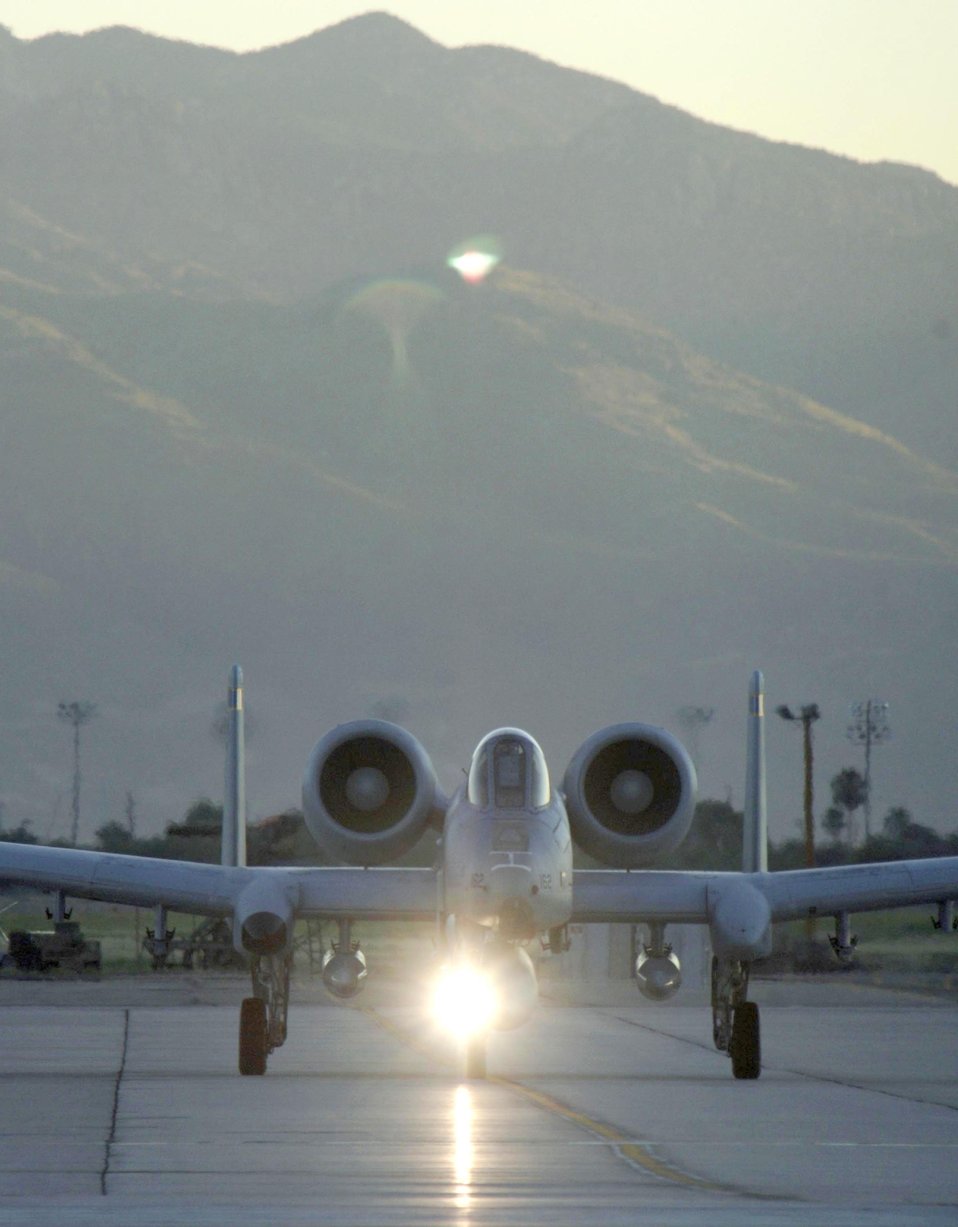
A-10 launch

An A-10 Thunderbolt II taxis out to the runway, before launching as part of exercise Bushwacker 06-04, at Davis-Monthan AFB Sept. 16. The A-10's and pilots are assigned to the 354th Fighter Squadron.